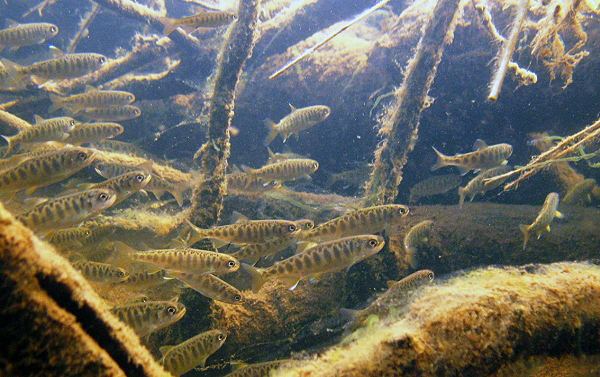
school of juvenile chinook/king salmon